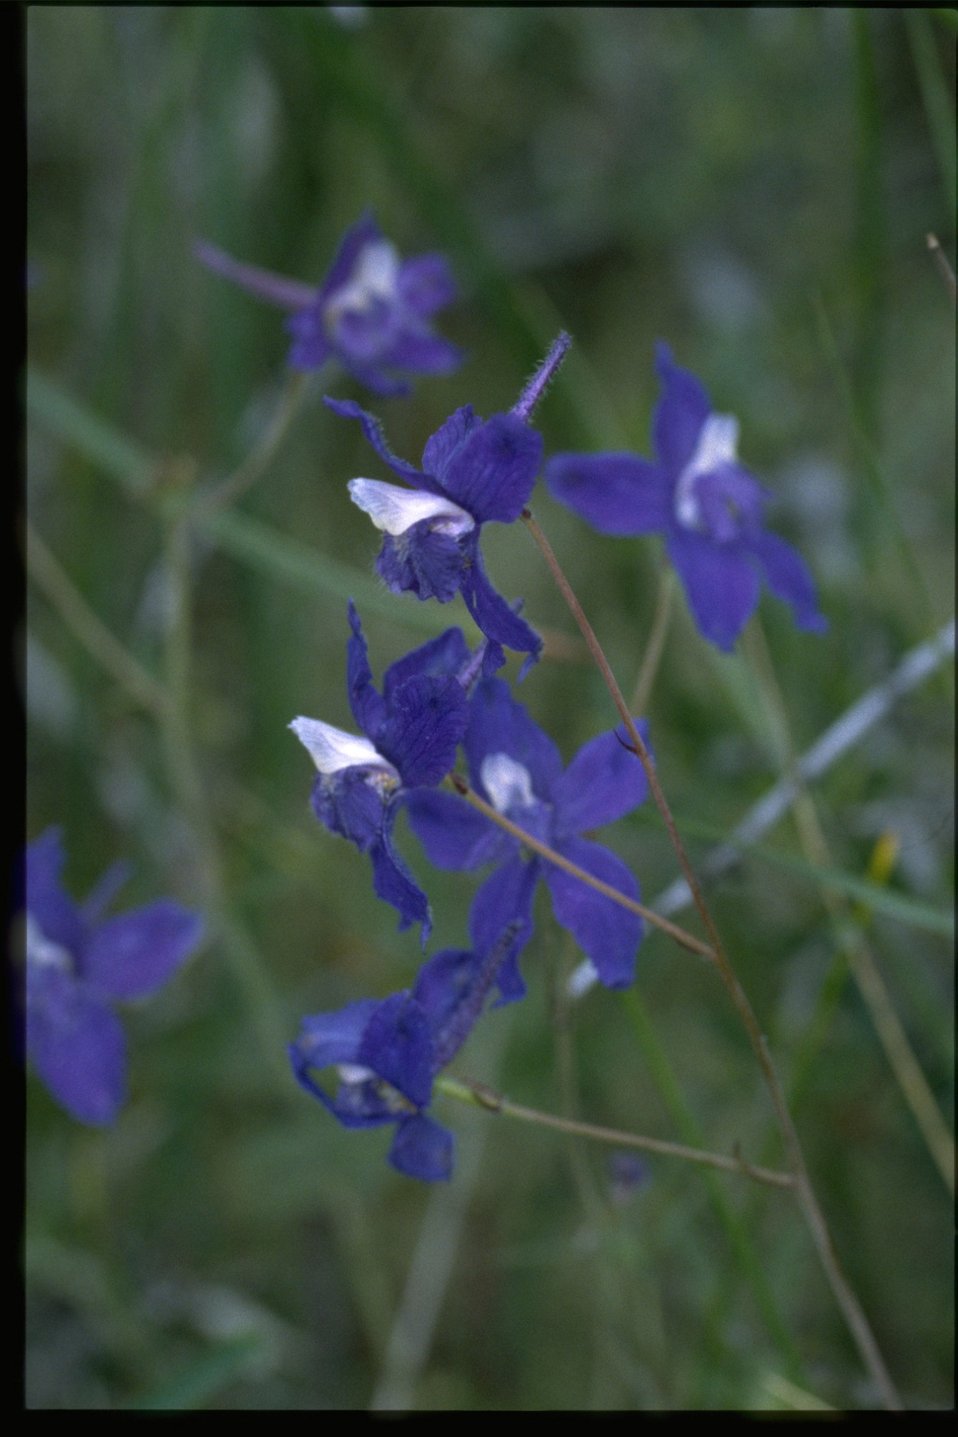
Closeup shot of Delphinium wildflower.